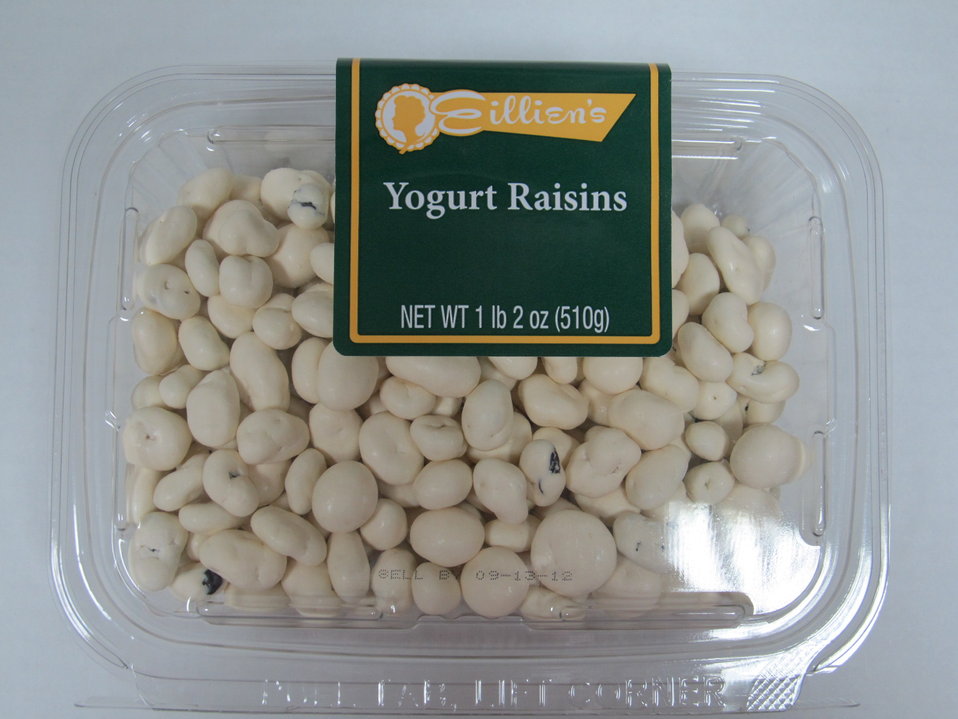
RECALLED - Yogurt Raisins and Granola Mix

December 22, 2011 - Eillien's Candies, Inc. Issues a Voluntary Recall of Select Candy Items Due to Possible Health Risk.